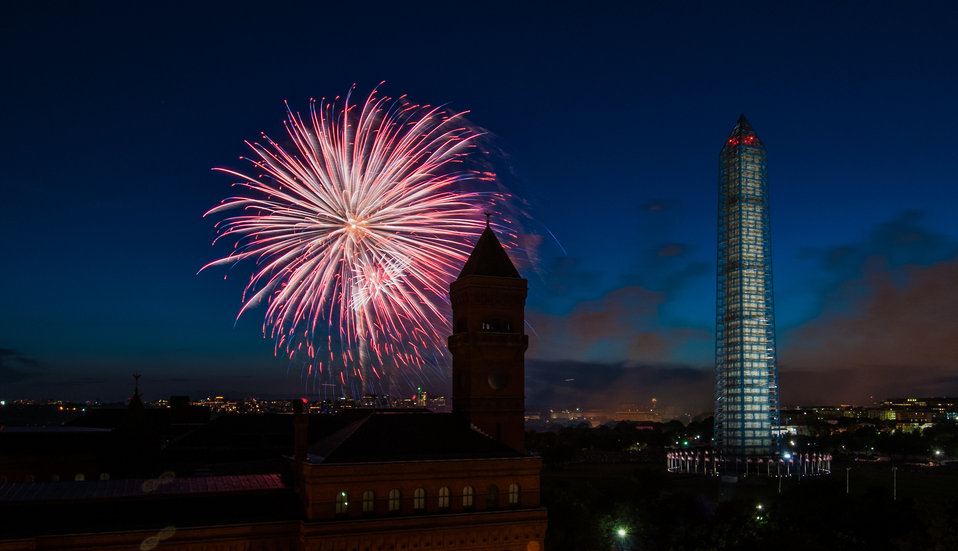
4th of July fireworks as seen from the U.S. Department of Agriculture (USDA) headquarters building, with the USDA Forest Service Yates Building in the foreground, left, and the Washington Monument in Washington, D.C., on July 4, 2013.